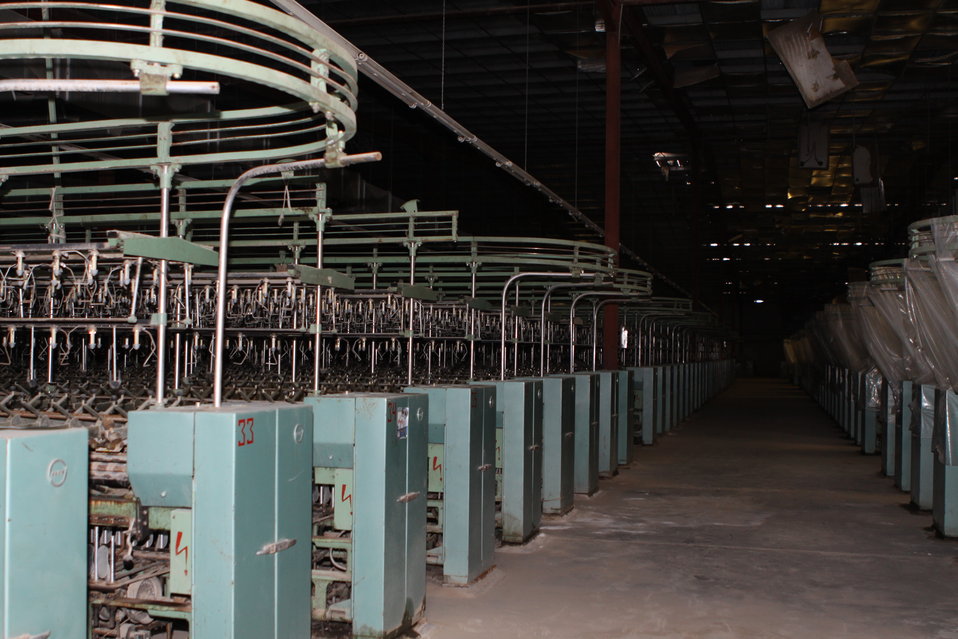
100525 Hirat Textile Company 728